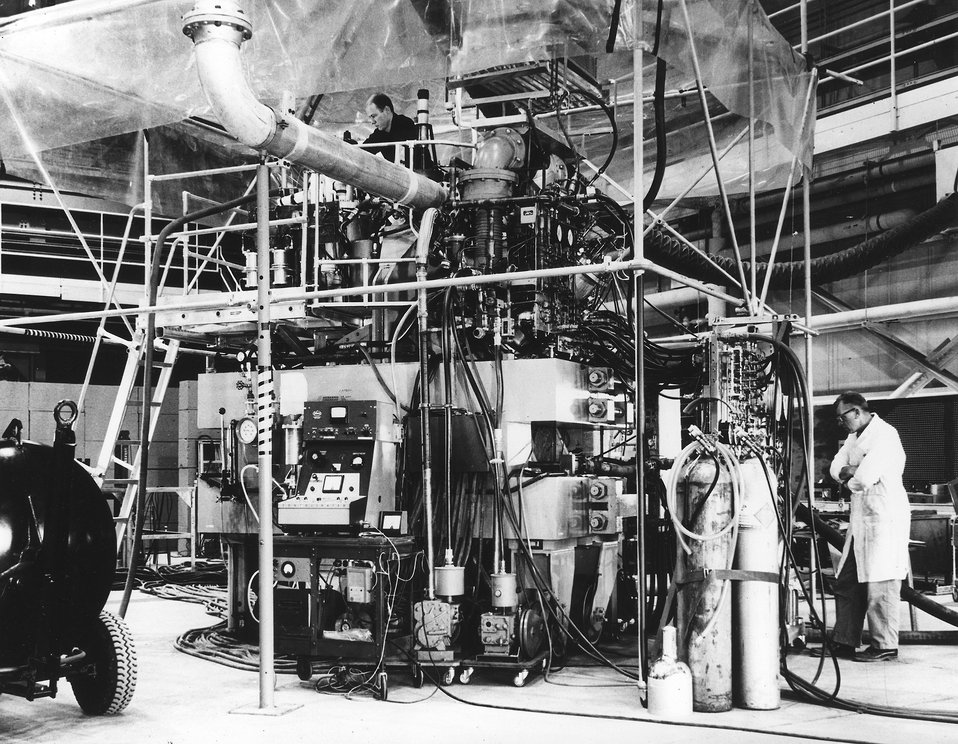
The 20-inch bubble chamber used with the Cosmotron at Brookhaven National Laboratory. c. 1961